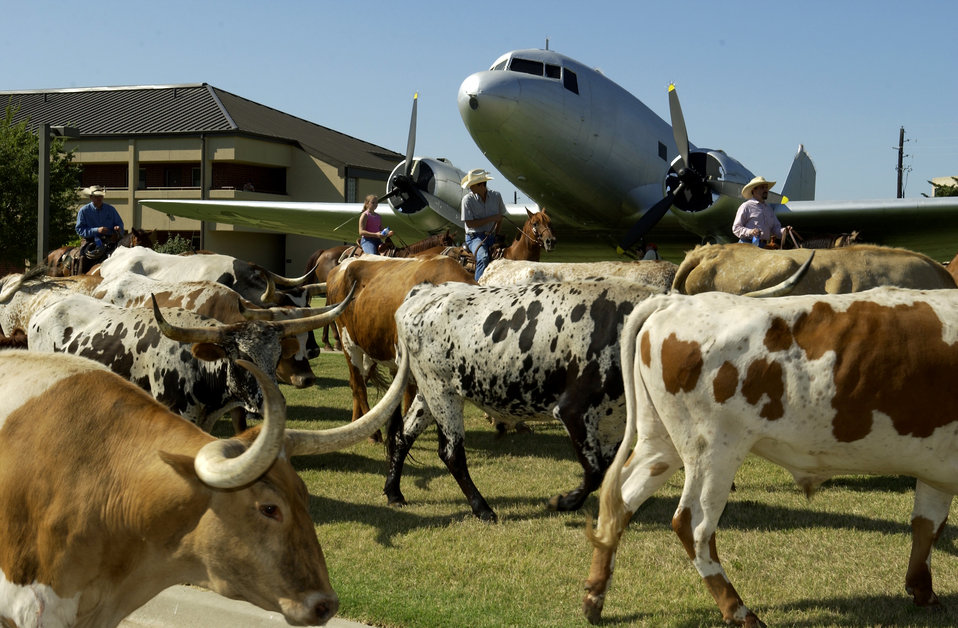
Just mo-o-oving along

ALTUS AIR FORCE BASE, Okla. -- Cowboys and cowgirls lead a herd of cattle through the static display area here Aug. 26 during the annual longhorn cattle drive through the base. Altus community leaders, commanders and ranchers drove the 50 longhorns through the base to help promote Military Appreciation Night and the opening round of the Altus Great Plains Stampede Rodeo.